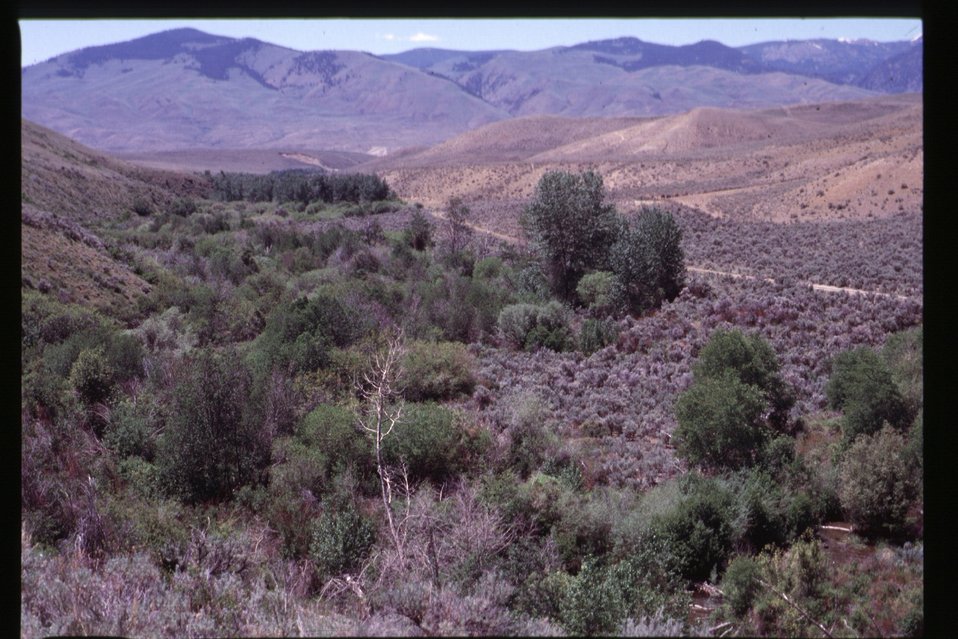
Patte Creek Canyon Lemhi Range in background Lewis and Clark Trail Salmon Field Office UCSC Upper Columbia Salmon Clearwater District